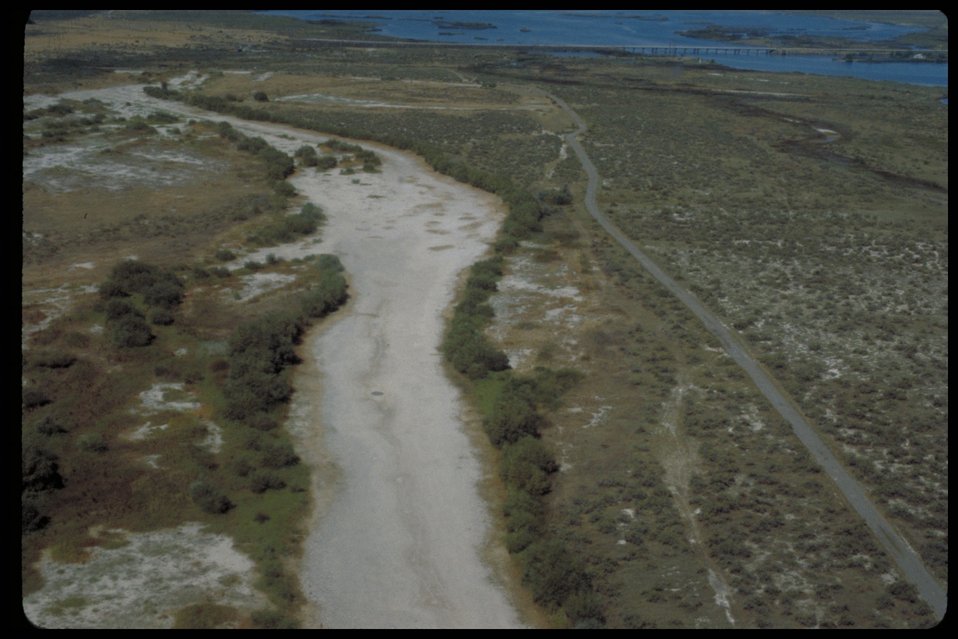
Oregon Trail Lower Snake River District